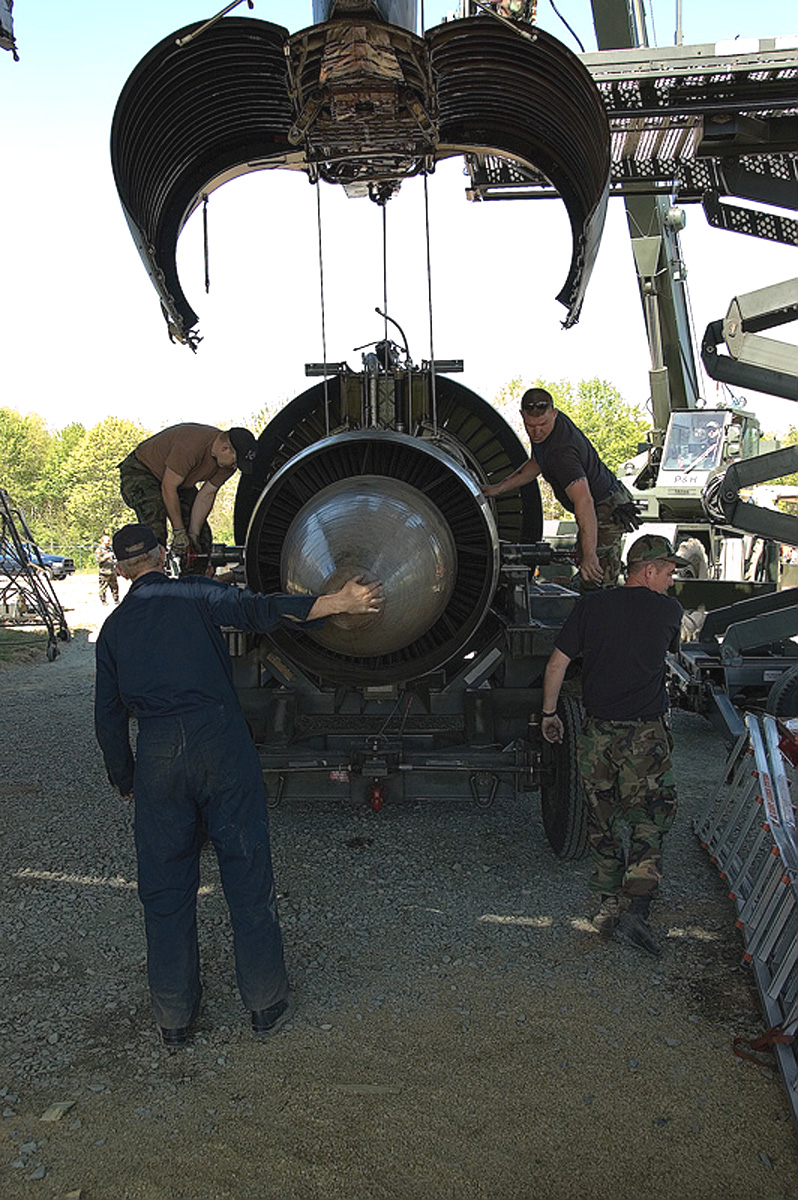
C-5 recovery efforts continue at Dover

(Clockwise from top left) Staff Sgts. James Leslie and Mark Rose and Tech. Sgts. Peter Magagnotti and Bryan Hooper remove an engine on Friday, April 28, 2006, from the C-5 Galaxy that crashed at Dover Air Force Base, Del., April 3. Although the engine is off the plane, it will remain at the site along with the other parts until cleared for release by the accident investigation board. Sergeants Leslie and Hooper are with the 512th Component Maintenance Squadron. Sergeants Rose and Magagnotti are with the 436th Maintenance Squadron.